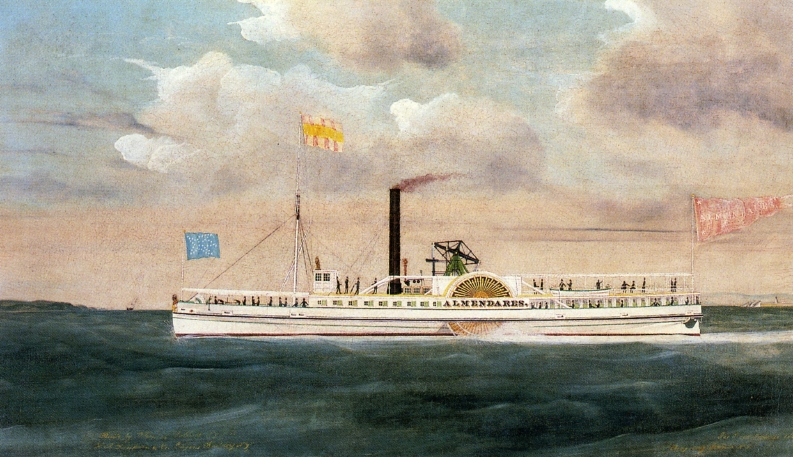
Almendares